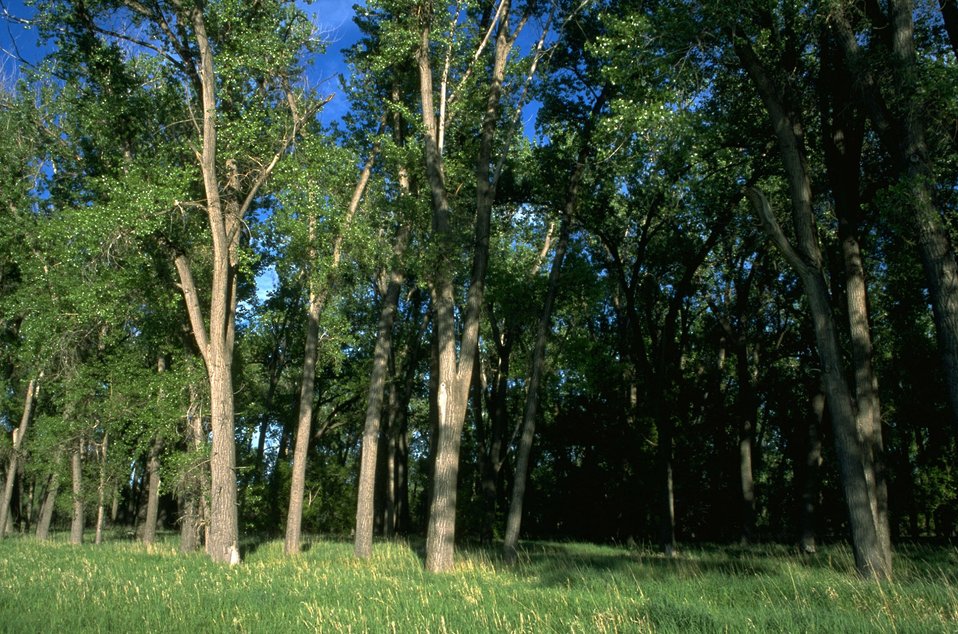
Grove of cottonwood trees east of parking lot in the Sundance Lodge Recreation Area